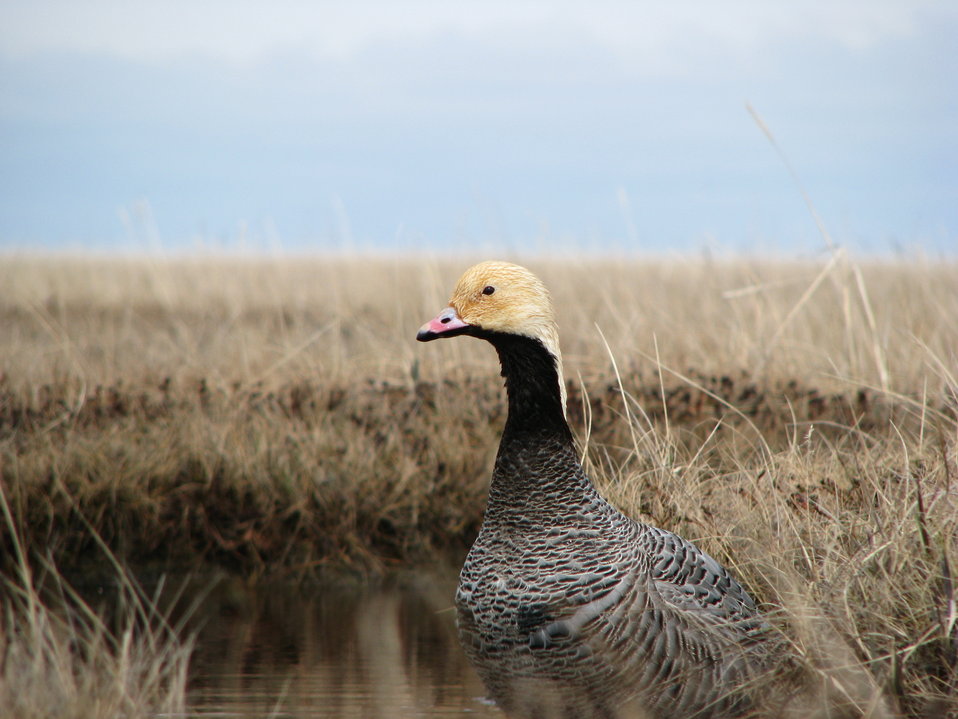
Emperor Goose close-up

Yukon Delta NWR